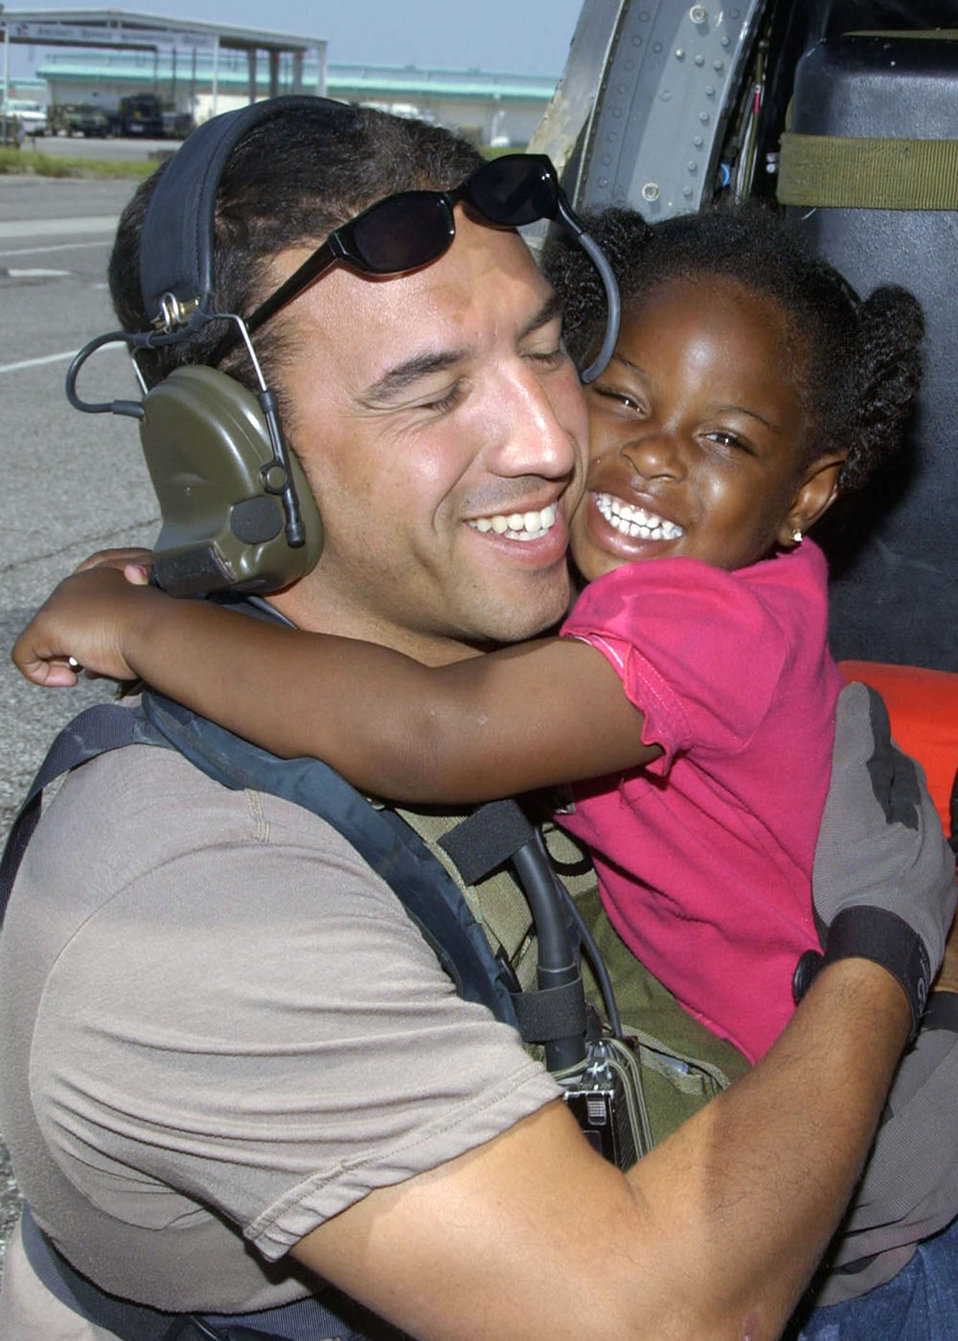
A big thank you

NEW ORLEANS -- A young Hurricane Katrina survivor hugs her rescuer, Staff Sgt. Mike Maroney, after she was relocated to the Louis Armstrong New Orleans International Airport, La., on Sept. 7. Sergeant Maroney is a pararescueman from the 58th Rescue Squadron at Nellis Air Force Base, Nev.